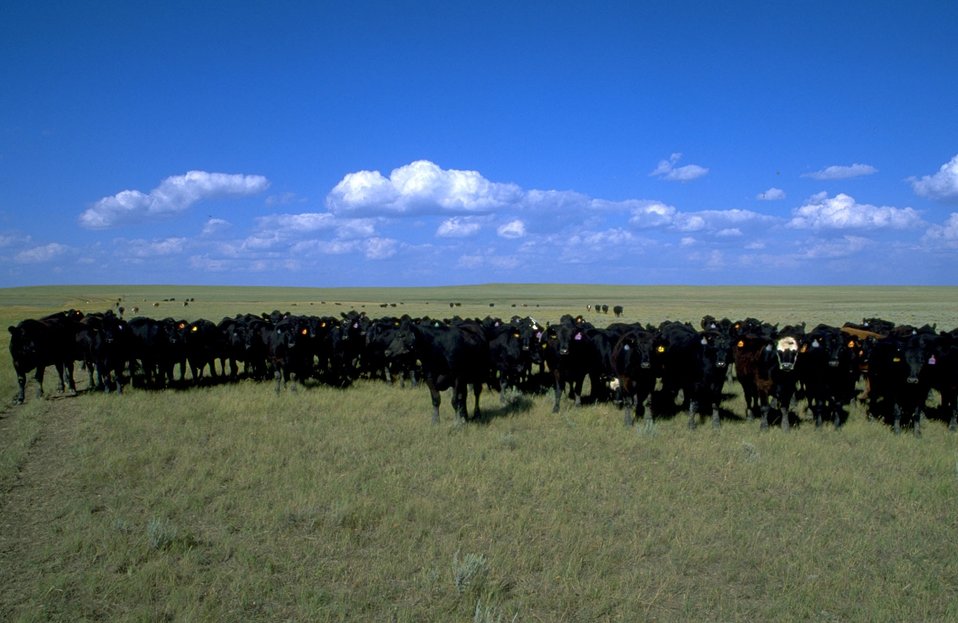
Yearling Cows on summer range with Battle Creek in the background